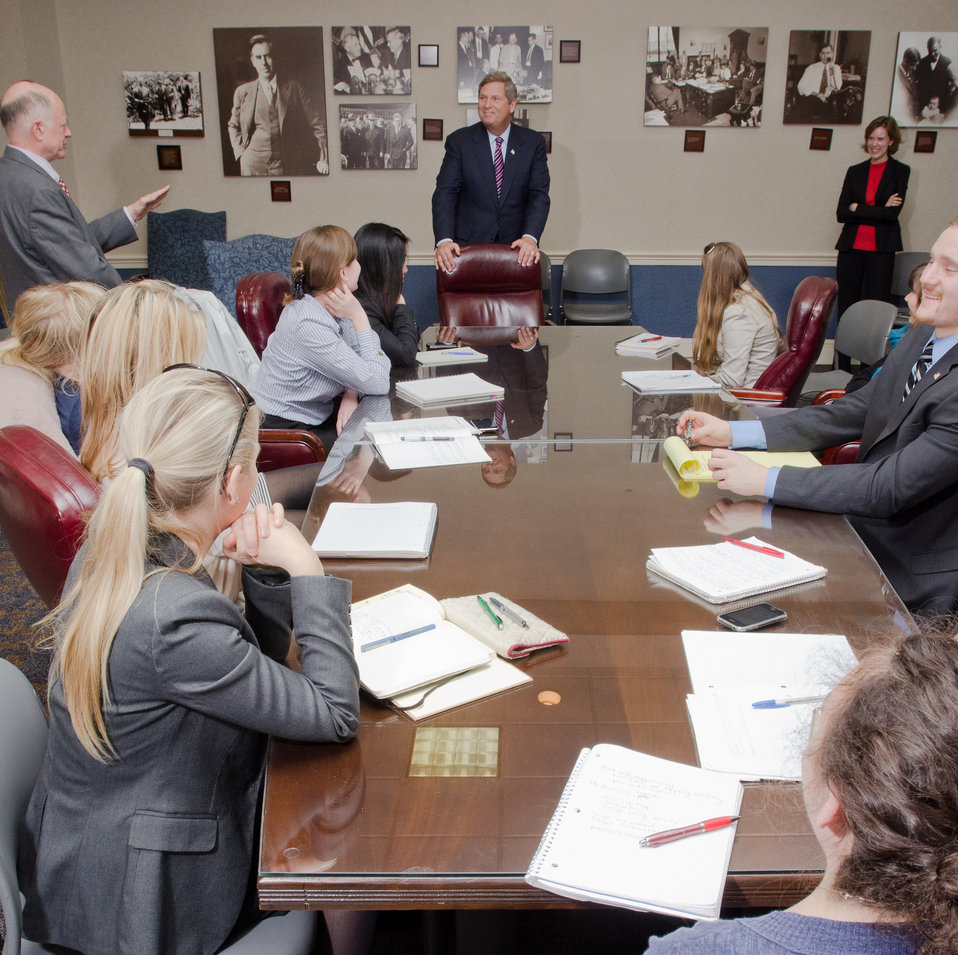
American University Assistant Professor Daniel Whitman asks U.S. Department of Agriculture (USDA) Secretary Tom Vilsack a question during the meeting with American University students The meeting took place at the USDA on Wednesday March 23, 2011, in Washington, DC. The student came to learn about Foreign Agriculture Service and the international role of the USDA. Supporting their visit was Deputy Under Secretary Farm and Foreign Agricultural Services Darci Vetter (standing right with red blouse).